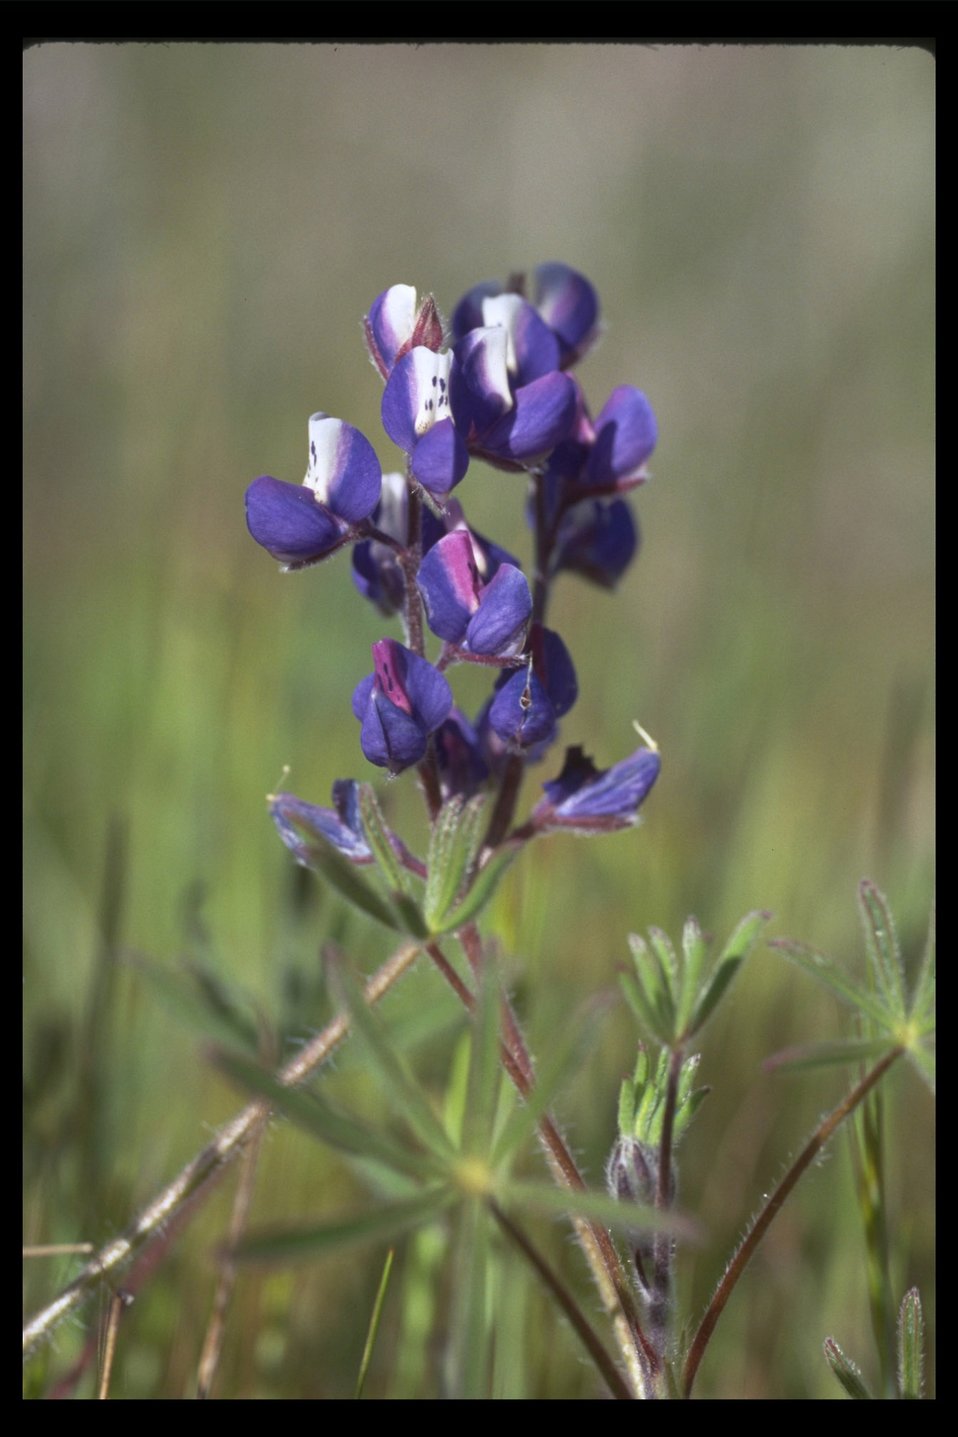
Miniature Lupine (Lupinus bicolor) at Upper Table Rock trail.